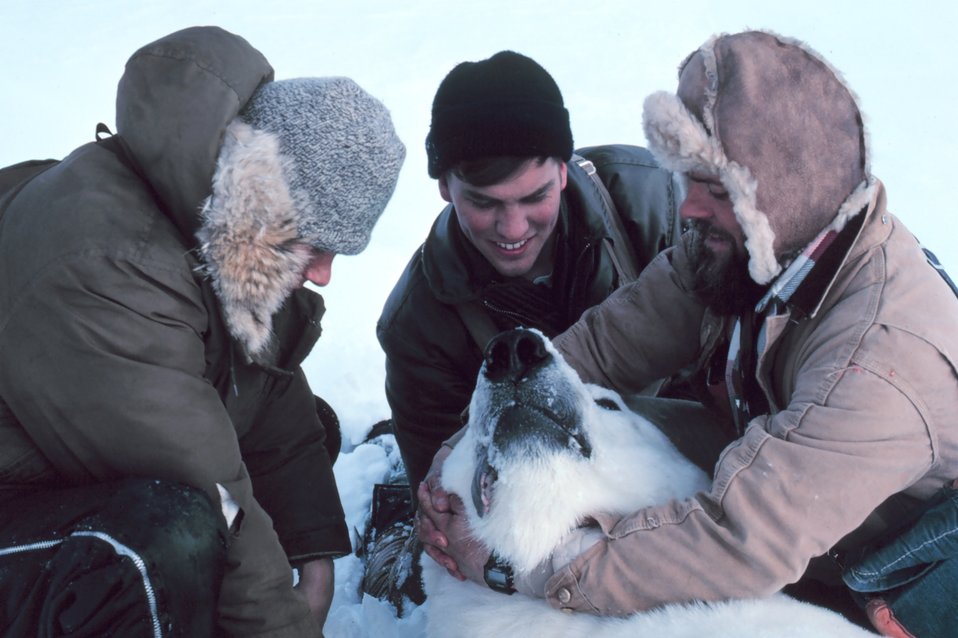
Preparing to pull tooth of large sedated polar bear - Ursus maritimus. Bears were measured and tagged for future study. Teeth were pulled to study age and general health of bears.